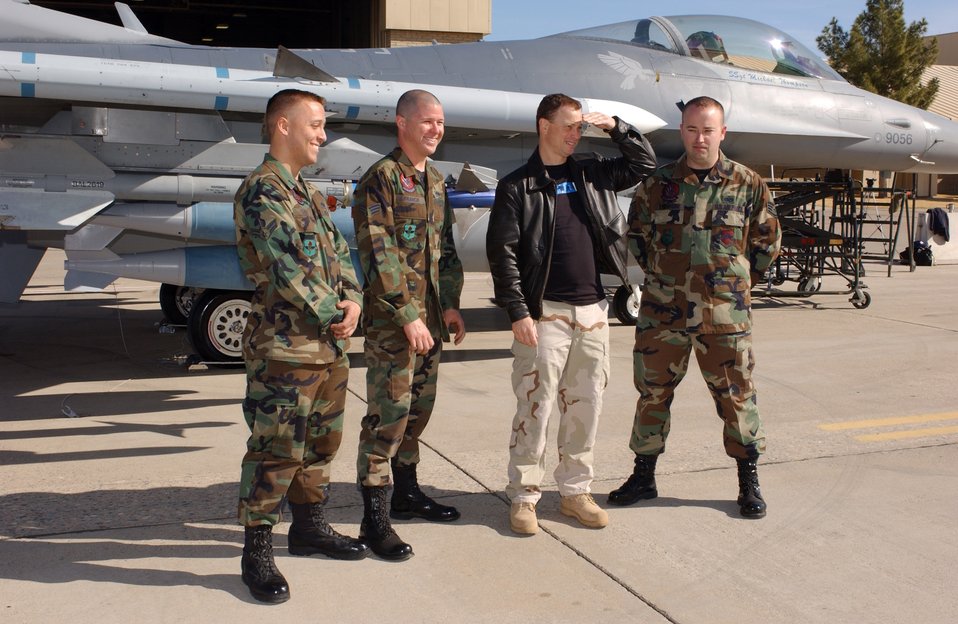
'Lt. Dan' tours Luke Air Force Base

LUKE AIR FORCE BASE, Ariz. -- Gary Sinise looks at F-16 Fighting Falcons on the flightline here with Airman 1st Class Bryan Strole (left), Senior Airman Ian Franck and Staff Sgt. Michael Thompson (right). Mr. Sinise and his band performed here Jan. 28. The Airmen are crew chiefs with the 756th Aircraft Maintenance Squadron.